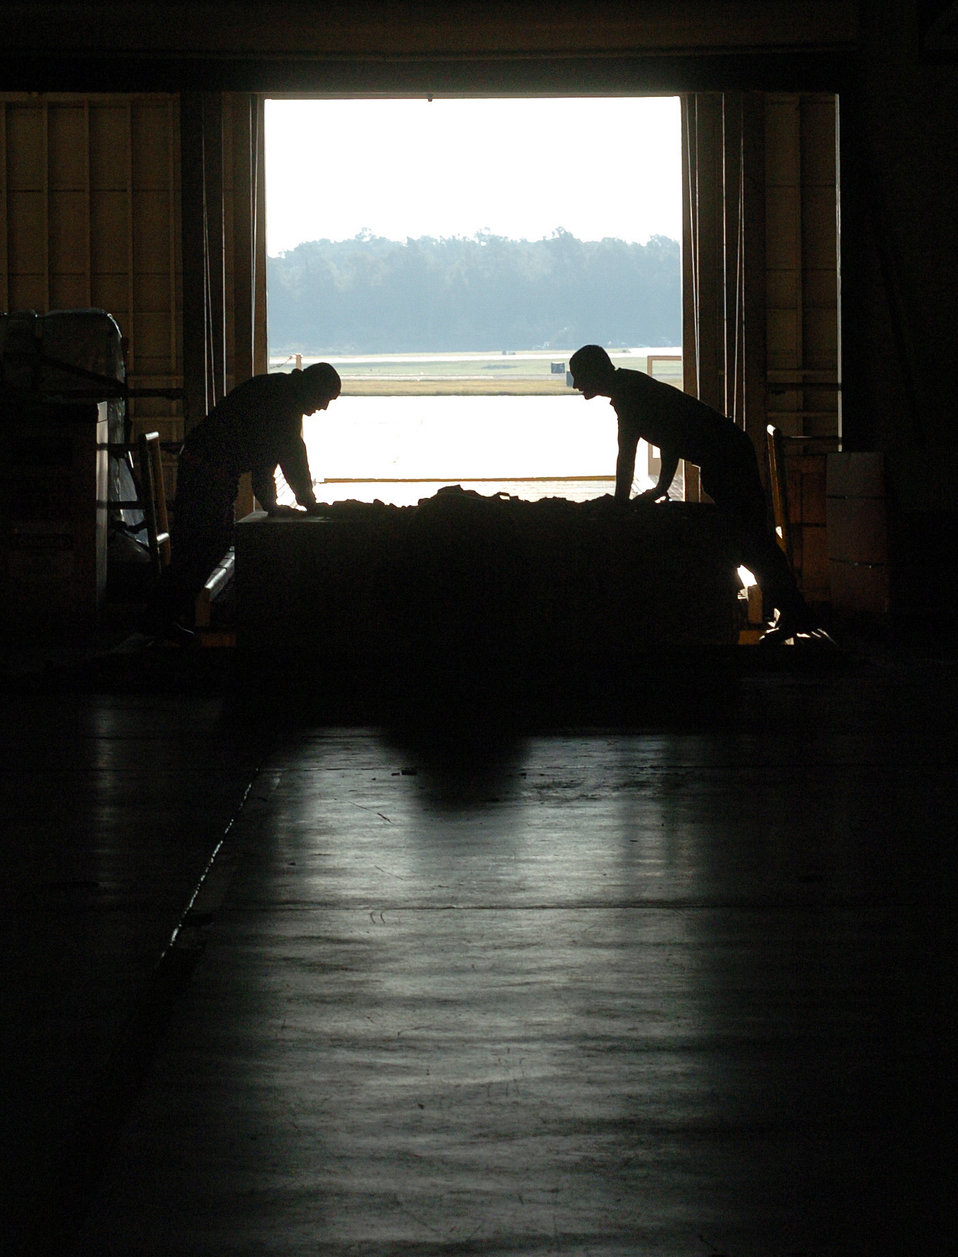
Loading Up

Airmen from the 437th Aerial Port Squadron secure a pallet to be transported to Southwest Asia at Charleston Air Force Base, S.C., Oct. 25, 2006.